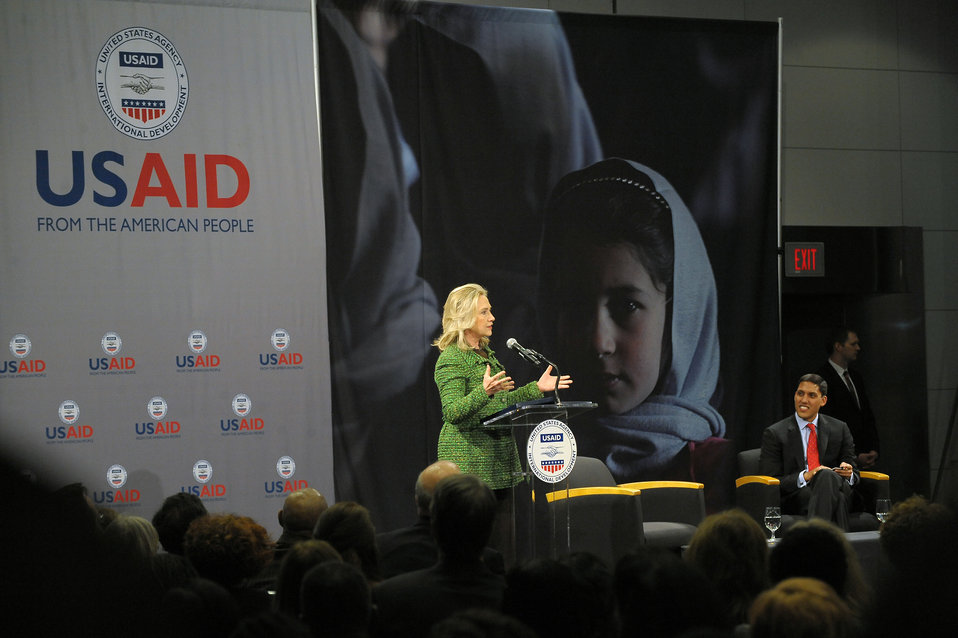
Secretary Clinton Participates in the USAID Town Hall Meeting

U.S. Secretary of State Hillary Rodham Clinton participates in the USAID town hall meeting at the Ronald Reagan Building in Washington, D.C., on February 15, 2012.